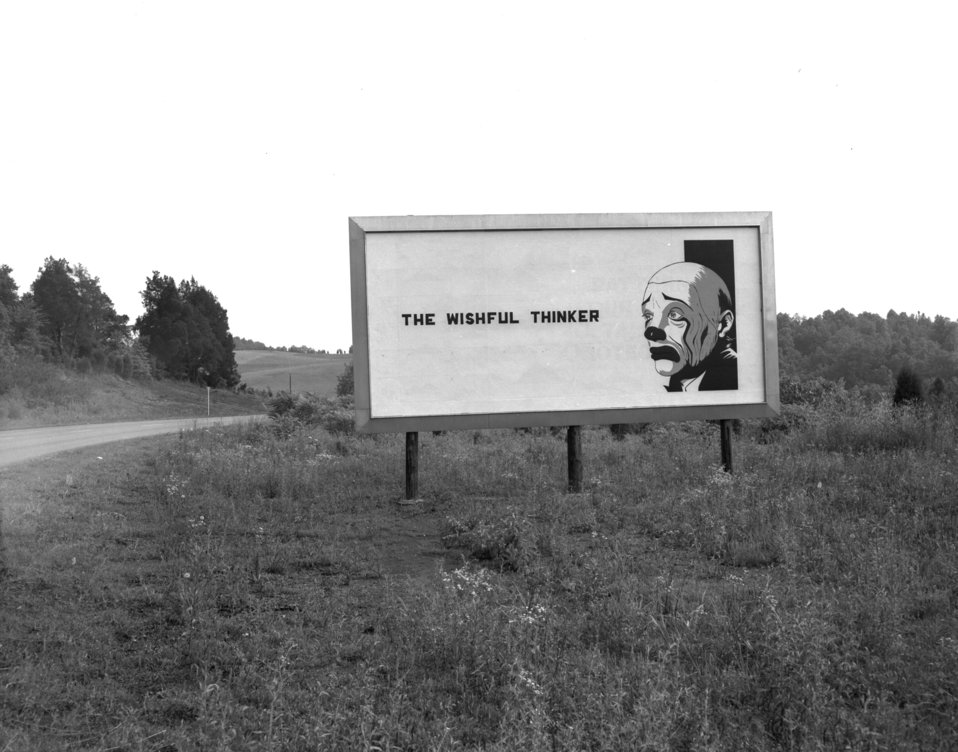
Security Billboard Oak Ridge

60-0584gh DOE photo by T.R.

Oak Ridge Tennessee 6/24/1960